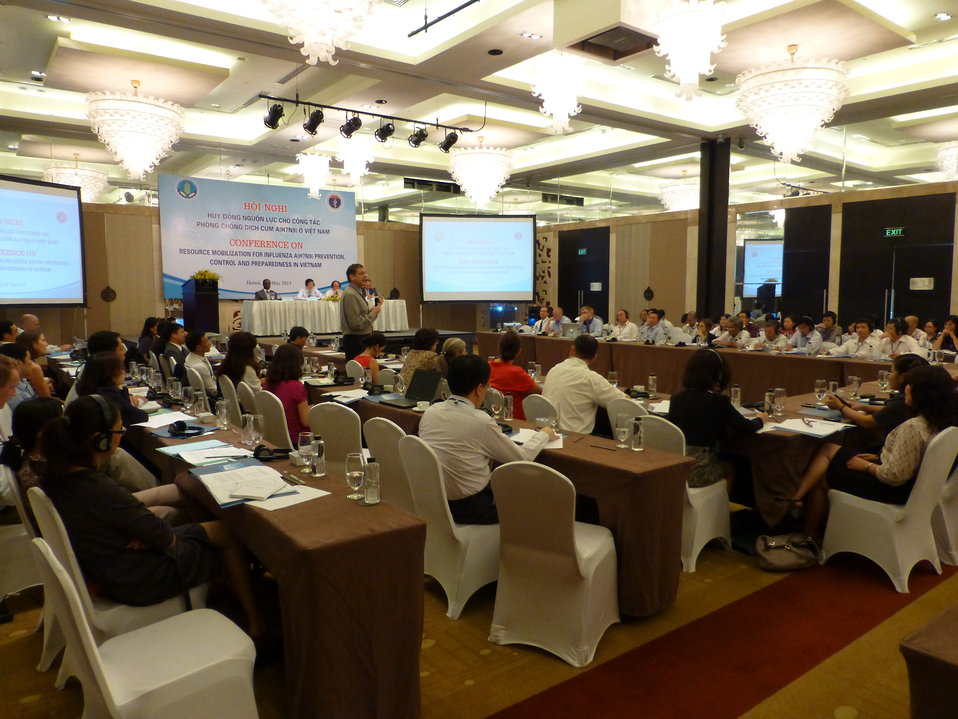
Conference on Resource Mobilization for Influenza A (H7N9) Prevention, Control and Preparedness in Vietnam

Hanoi, May 6, 2013
Supported by USAID Vietnam